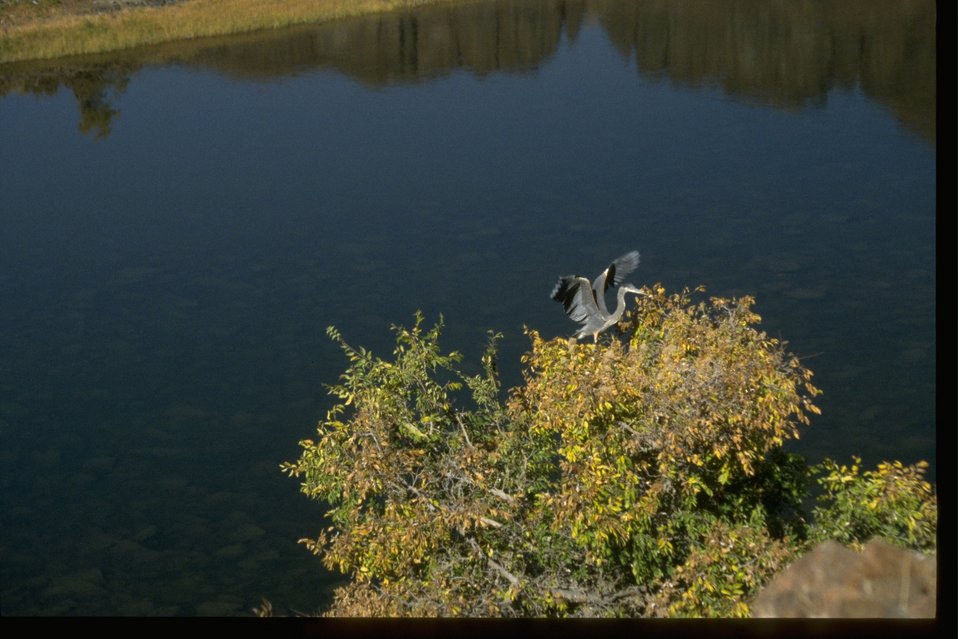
Heron lands on top of bush with wings spread along the John Day River.